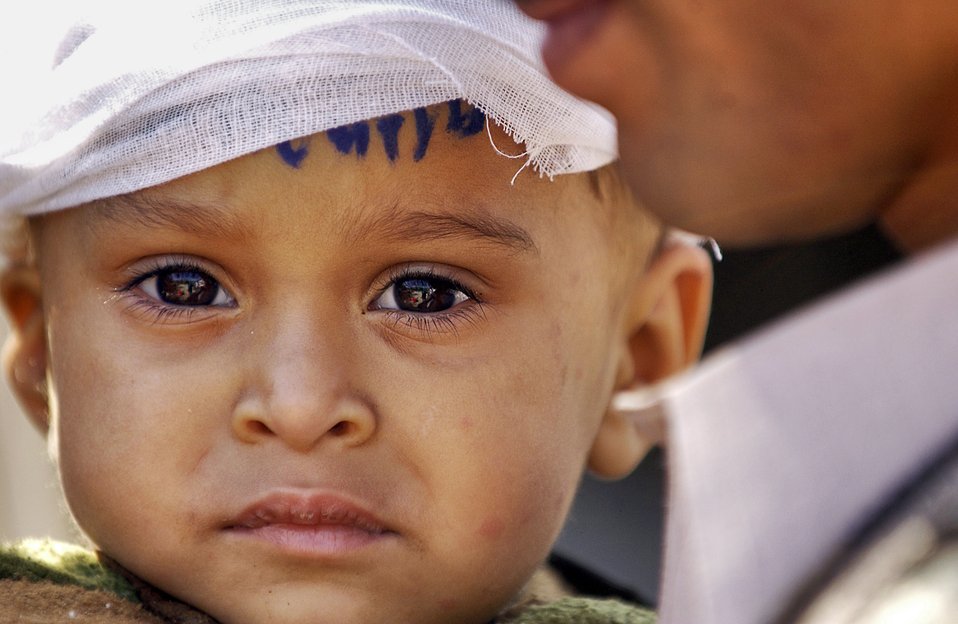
The face of relief

MUZAFFARABAD, Pakistan -- An injured Pakistani child here waits for transport to a medical center in Islamabad Oct. 20. U.S. servicemembers are participating in a huge multinational humanitarian aid and support in areas of the country devastated by an Oct. 8 earthquake. Pakistani officials announced the quake has killed more than 48,000 and left millions homeless.